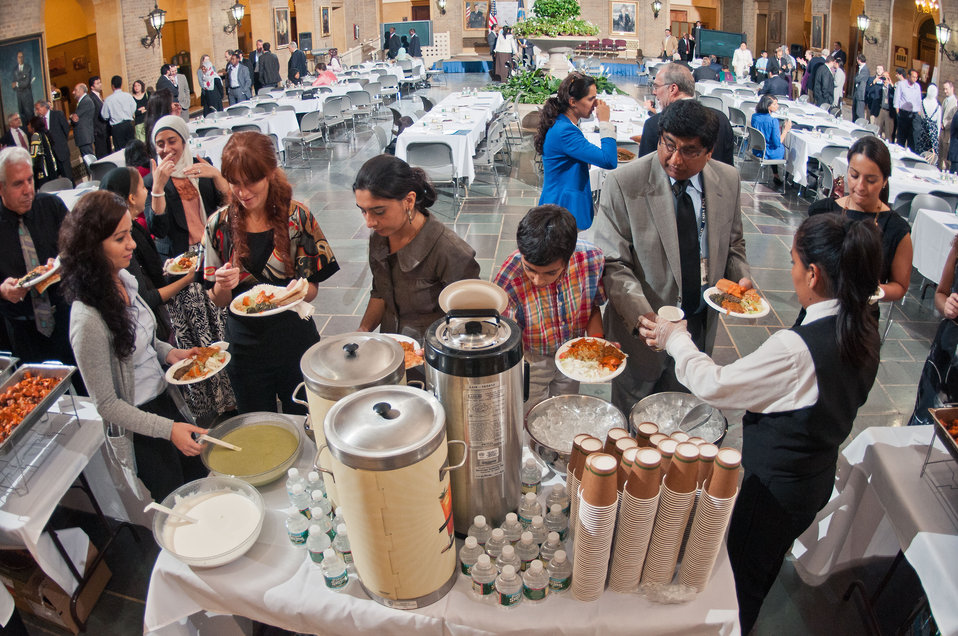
Long, fast lines moved through the buffet, after sunset, during tthe Iftar celebration, co-sponsored by the U.S. Department of Agriculture, U.S. Agency for International Development (USAID) and Islamic Relief USA, on Tuesday, August 7, 2012, at the USDA Whitten Building, in Washington, D.C. Ramadan is the month of fasting, intensive prayer, sacrifice and worship for Muslims around the world. Throughout this month, Muslims fast during the day, abstaining from consuming food from dawn to dusk and using this time to purify spiritually. Fasting reminds Muslims of the poverty and hunger suffered by many in the United States and worldwide. It is a connection with those who are hungry not through devotion, but through the many global factors that lead to hunger and famine. Iftar is the meal at which Muslims break their fast at sunset, usually by eating dates, according to the Prophetic tradition.